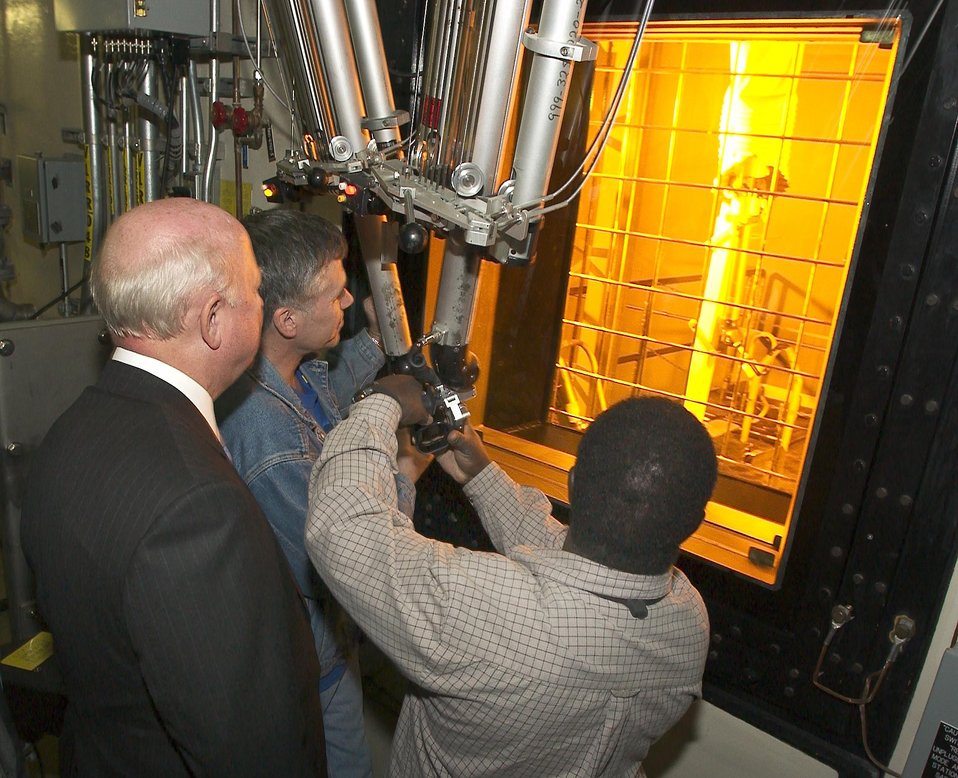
SECRETARY OF ENERGY BODMAN AT AN EXHIBIT DETAILING THE LIQUID WASTE TANK CLOSURE PROJECT AT THE SAVANNAH RIVER SITE.

THE SAVANNAH RIVER SITE'S DEFENSE WASTE PROCESSING FACILITY NEAR AIKEN, S.C., IS THE WORLD'S LARGEST RADIOACTIVE WASTE VITRIFICATION FACILITY. THE PURPOSE OF DWPF IS TO IMMOBILIZE APPROXIMATELY 37 MILLION GALLONS OF HIGH LEVEL RADIOACTIVE WASTE FROM UNDERGROUND TANKS AT THE SRS. THE HIGH LEVEL WASTE IS VITRIFIED INTO A DURABLE BOROSILICATE GLASS, POURED INTO STAINLESS STEEL CANISTERS AND STORED PRIOR TO EVENTUAL DISPOSAL IN A GEOLOGIC REPOSITORY.